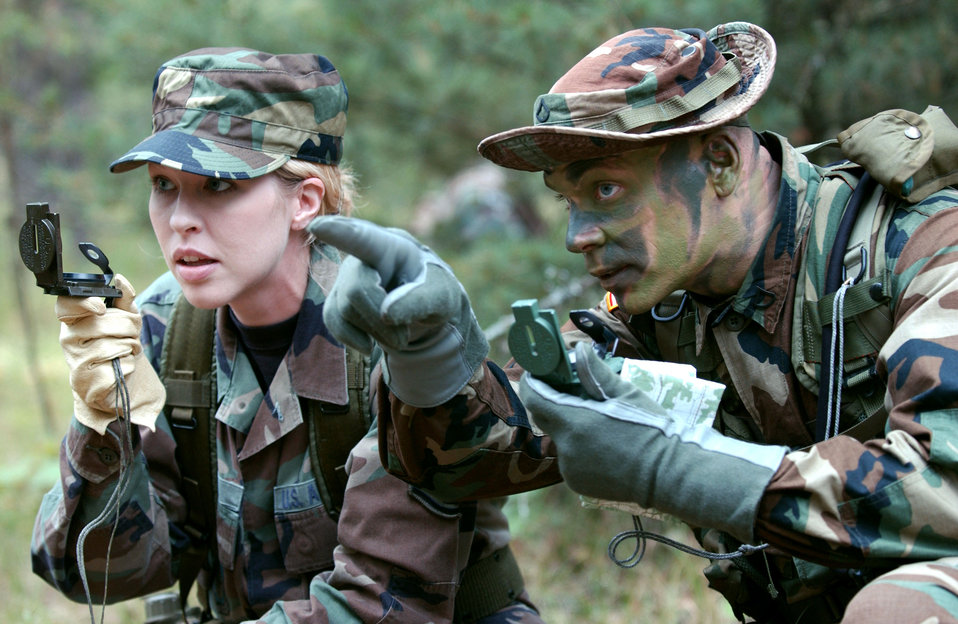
Learning to survive

Army Private First Class Dave Grever shows Tech. Sgt. Cindy Beaird how to shoot an azimuth during a combat search and air rescue operation at Fort McCoy, Wisc., July 21. The course was part of Patriot 2006, a National Guard-sponsored joint exercise held to increase the warfighting capabilities of Guard, Reserve and active-duty components of the Air Force and Army. Sergeant Beaird is information management functional manager with the Illinois Air National Guard's 126th Air Refueling Wing at Scott Air Force Base.